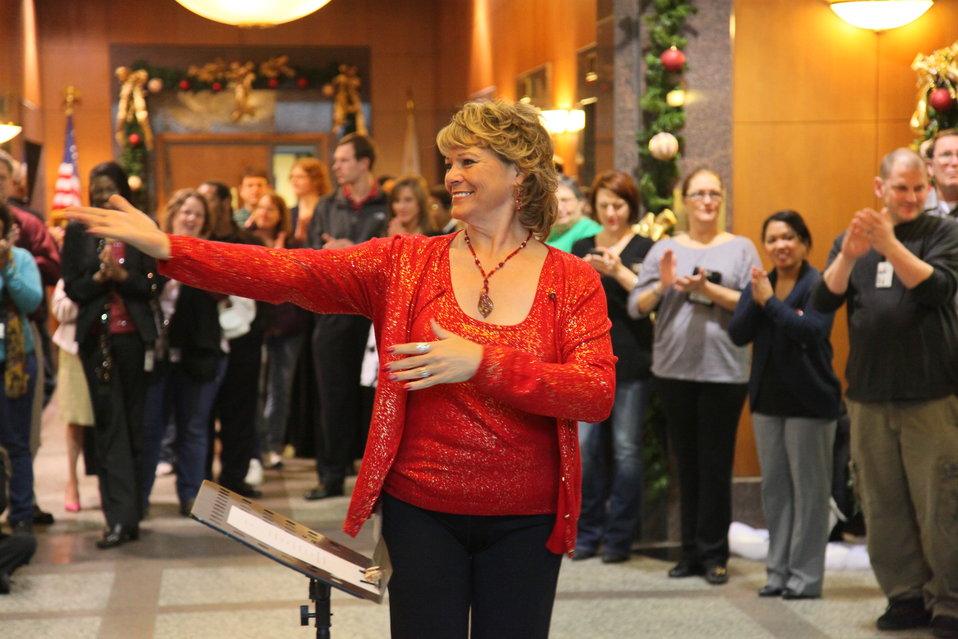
A Sacramento spirited performance by the Corps-Aliers

Budget analyst and Corps-Aliers conductor Lynne Erickson shares the applause with the rest of the choir after a performance at the U.S. Army Corps of Engineers Sacramento District headquarters building in Sacramento, Calif., Dec. 15, 2011. The all-volunteer group of singers from the district gave a spirited performance earlier this week at the California State Capitol Rotunda. The group is scheduled to perform Dec. 16 at the annual district holiday party